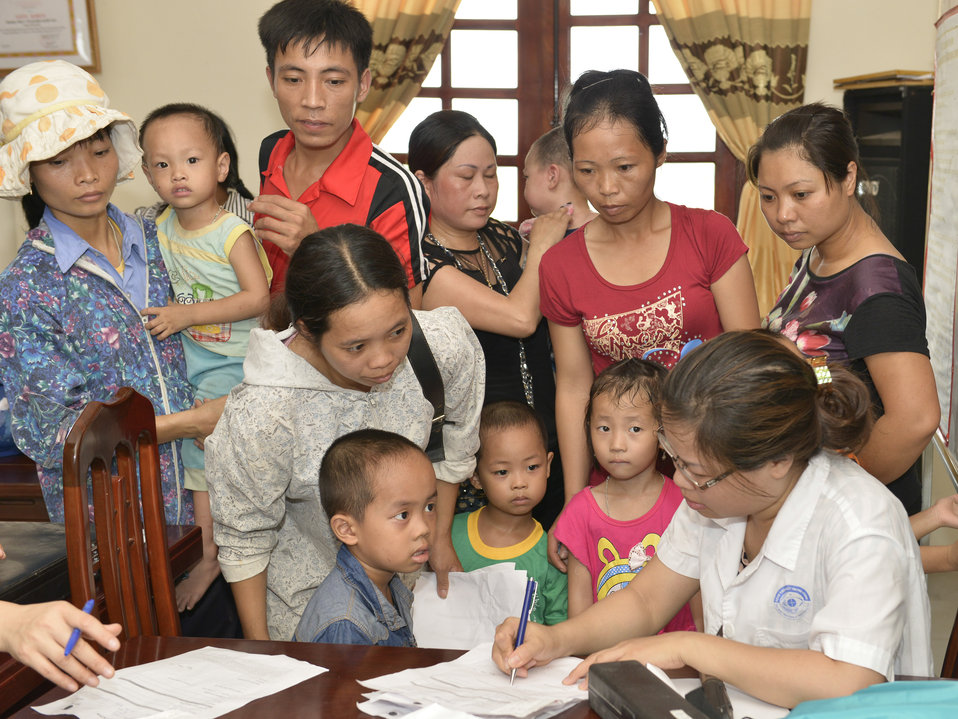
Eye screening for kindergarten children in Quoc Oai district of Hanoi

Quoc Oai, Hanoi. May 31, 2014.